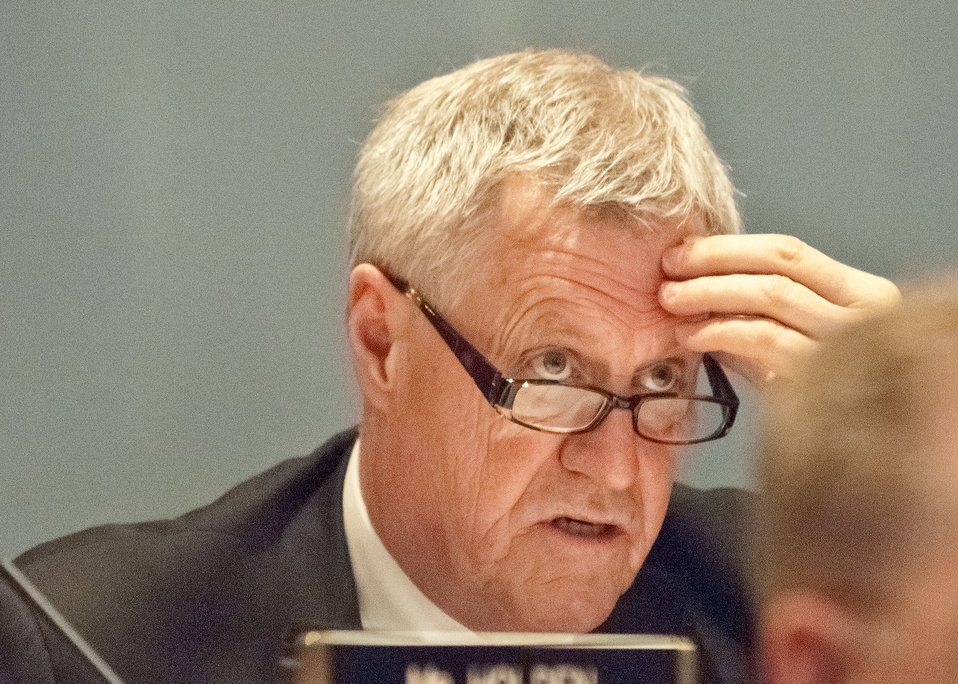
Rep. Collin Peterson, Minnesota, Ranking Member of the House Agriculture Committee listens to remarks by Agriculture Secretary Tom Vilsack on the, “State of the Ag Economy” at a House Agriculture Committee Hearing in the Longworth House Office Building in Washington, D.C., Thursday, February 17, 2011.